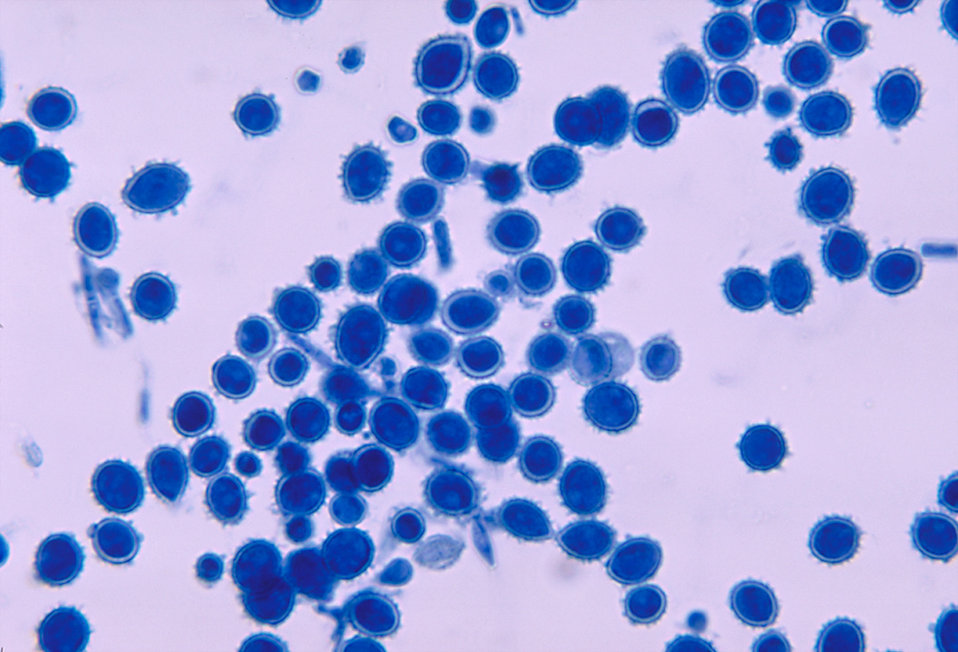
This micrograph depicts conidia from a fungal organism of the genus Sepedonium sp..